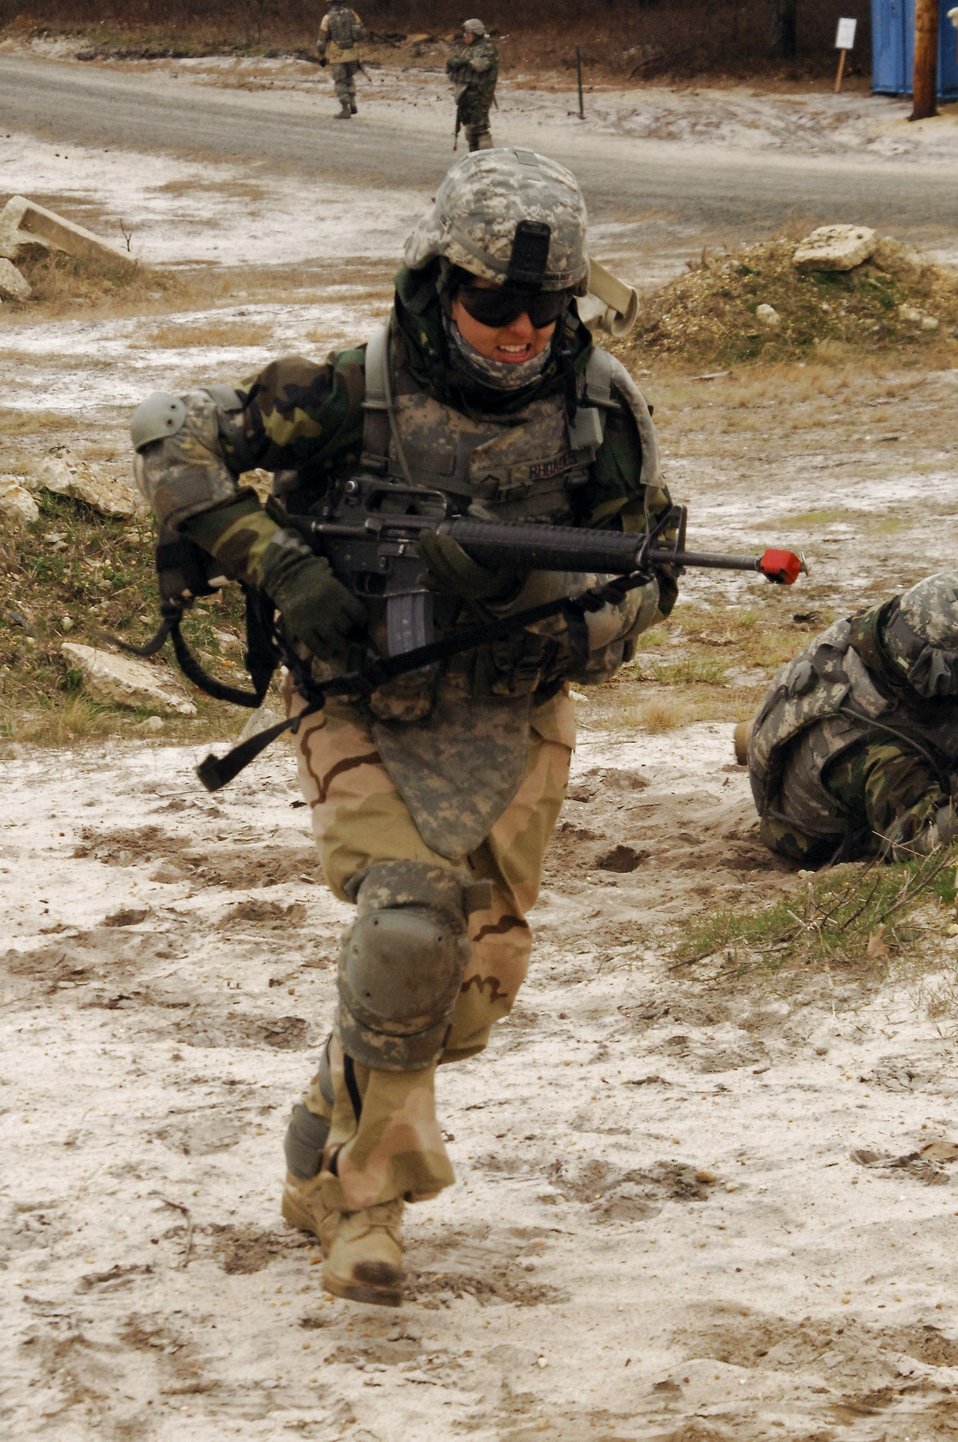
Airmen master Soldier skills training

Master Sgt. Sherri Rhoades runs to the next point during Individual Movement Technique training at the Fort Dix, N.J., Improvised Explosive Device range. The training teaches troops how to conduct maneuvers in an unknown, often hostile, environment. Sergeant Rhoades and her fellow Airmen, members of USAF Class 25, are completing the Soldier Skills Training Course as they prepare for various deployments around the globe. There are about 75 Airmen currently going through the month-long course.